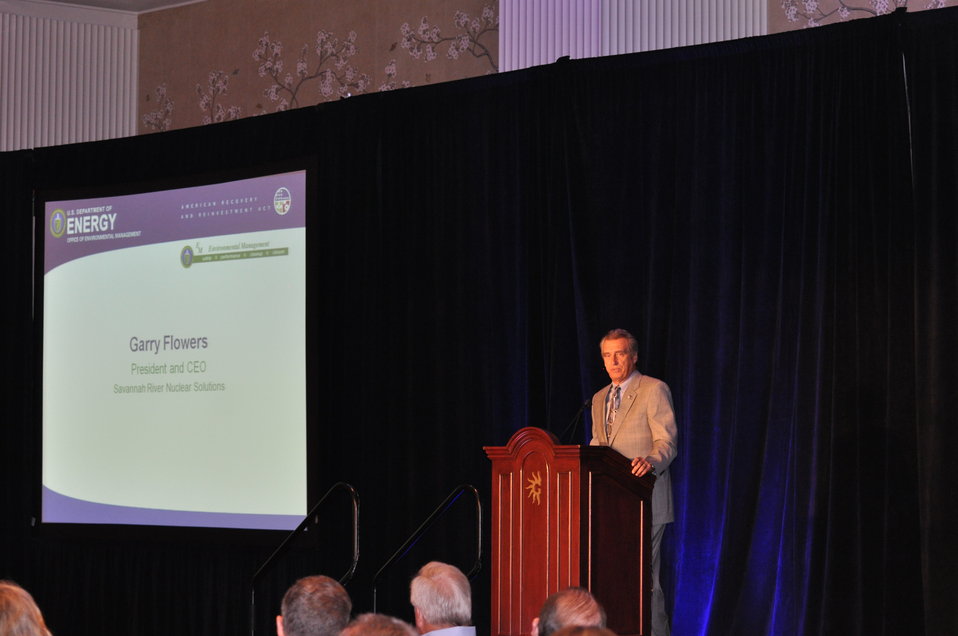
Information Exchange - Garry Flowers

Savannah River Nuclear Solutions President and CEO Garry Flowers informs the Information Exchange audience about Savannah River Site’s Recovery Act accomplishments, including the removal of the K Reactor cooling tower.